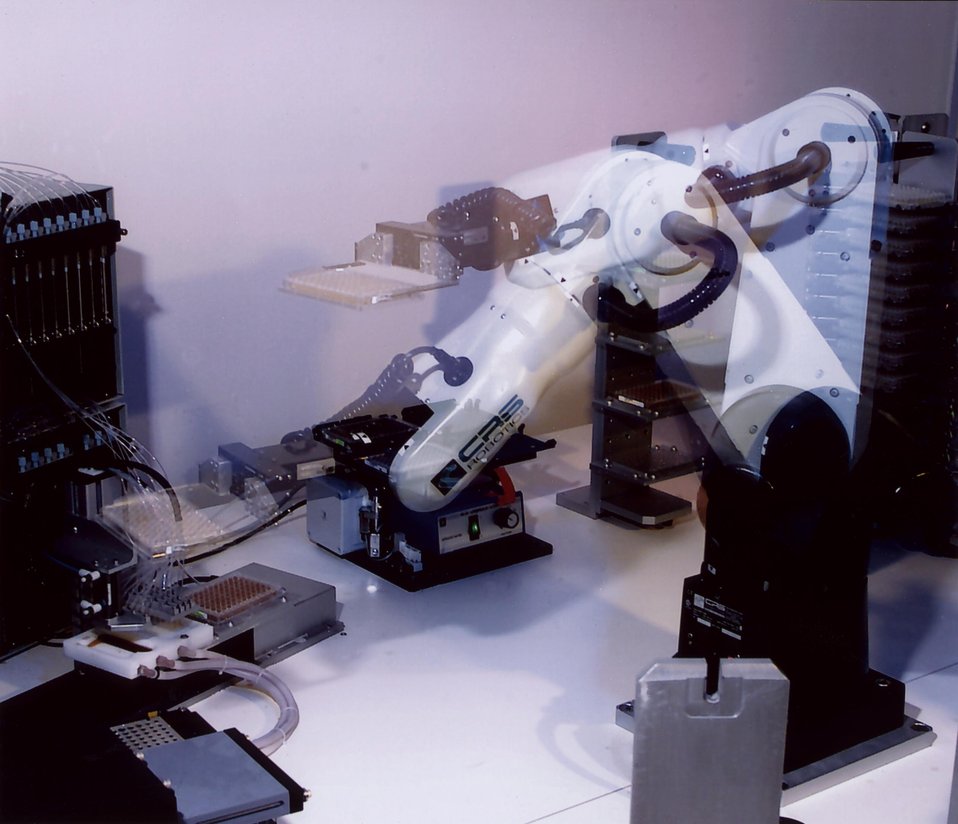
THE ROBOT MADE BY CRS INC. IN ACTION, PLACES A DNA SAMPLE PLATE ONTO A PLATE WASHER FOR PURIFICATION OF THE DNA, IN THE SEQUENCING PROCESS.
THE JGI, LOCATED NORTH OF LLNL, IS A COLLABORATION OF LLNL, LBNL AND LANL. AT THE PRODUCTION SEQUENCING FACILITY OF THE JGI, EMPLOYEES OF THE THREE INSTITUTIONS ARE WORKING TOGETHER TO SEQUENCE HUMAN CHROMOSOMES 5, 16, AND 19 FOR THE WORLDWIDE HUMAN GENOME PROJECT. SEQUENCING IS THE PROCESS HUNTING GENES. EACH OF OUR 100,000 GENES IS COMPOSED OF THE FOUR BASES, CALLED BASE PAIRS. SCIENTISTS ULTIMATELY WANT TO DECODE THE ENTIRE SEQUENCE OF DNA BASES, IN ORDER TO IMPROVE MEDICINE, HEALTH CARE AND OTHER AREAS OF BIOLOGICAL SCIENCE.